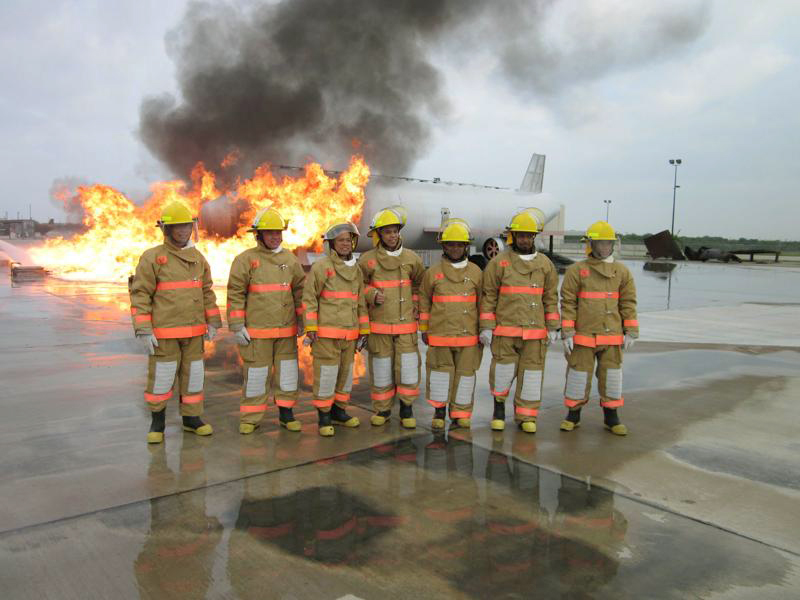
13th AF hosts international engineering exchange summit

Civil Engineers from the Asia-Pacific region participating in a subject matter expert exchange called Pacific Unity take time for a group photo following a fire training simulation June 4, 2010, at Goodfellow Air Force Base, Texas.